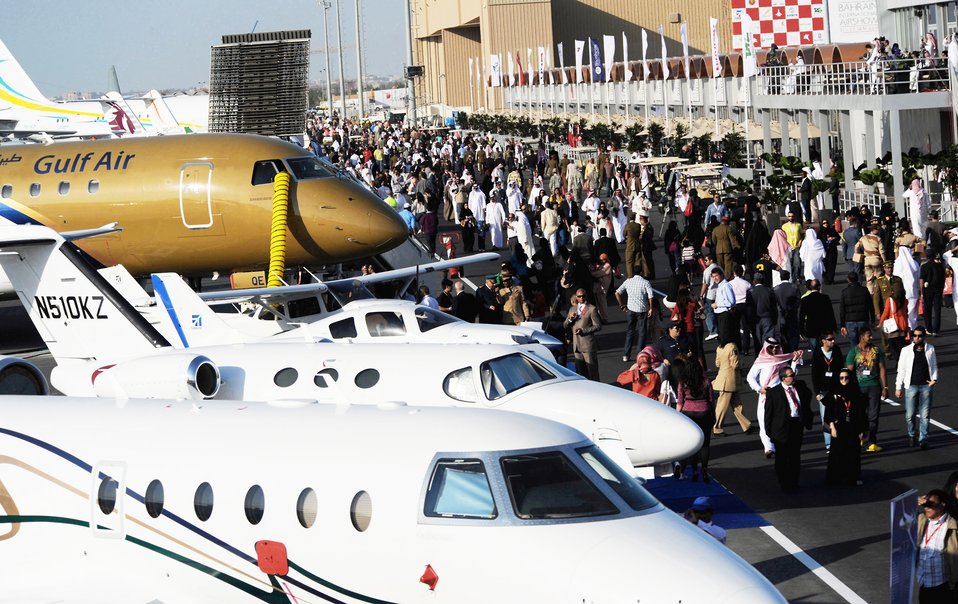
Airmen, Sailors demonstrate airpower at Bahrain International Airshow

Spectators from Bahrain and other Middle Eastern countries walk past aircraft during Bahrain's inaugural airshow Jan. 23, 2010.